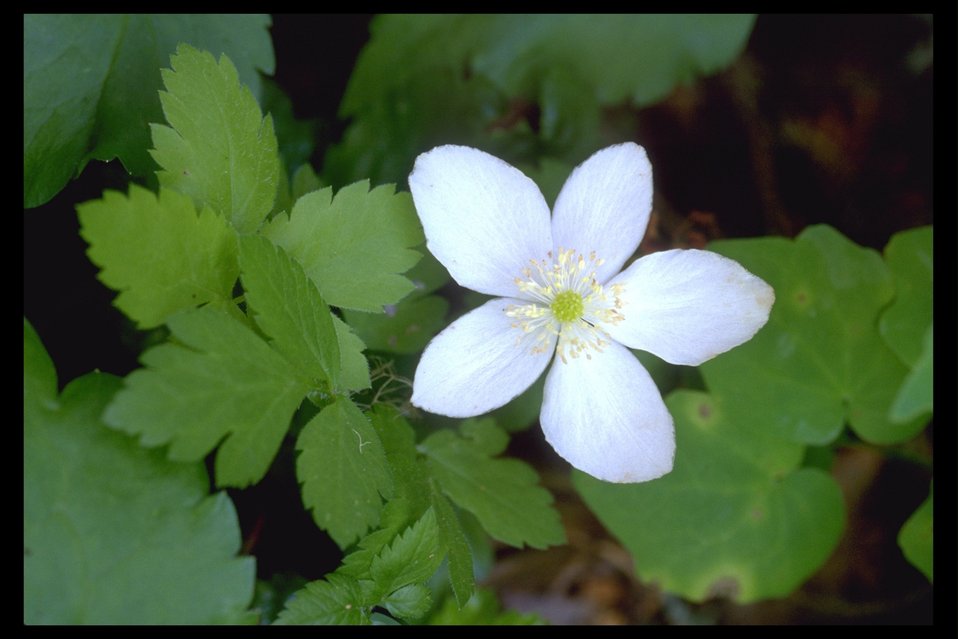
Western White Anemone (Anemone deltoidea) found near Upper Trail Creek.